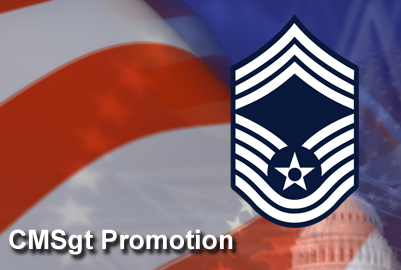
Officials to announce chief master sergeant selections

The Chief Master Sergeant promotion list will be released publicly Nov. 5, 2009, at 8 a.m. CST on the Air Force Personnel Center's public Web site and on AFPC's